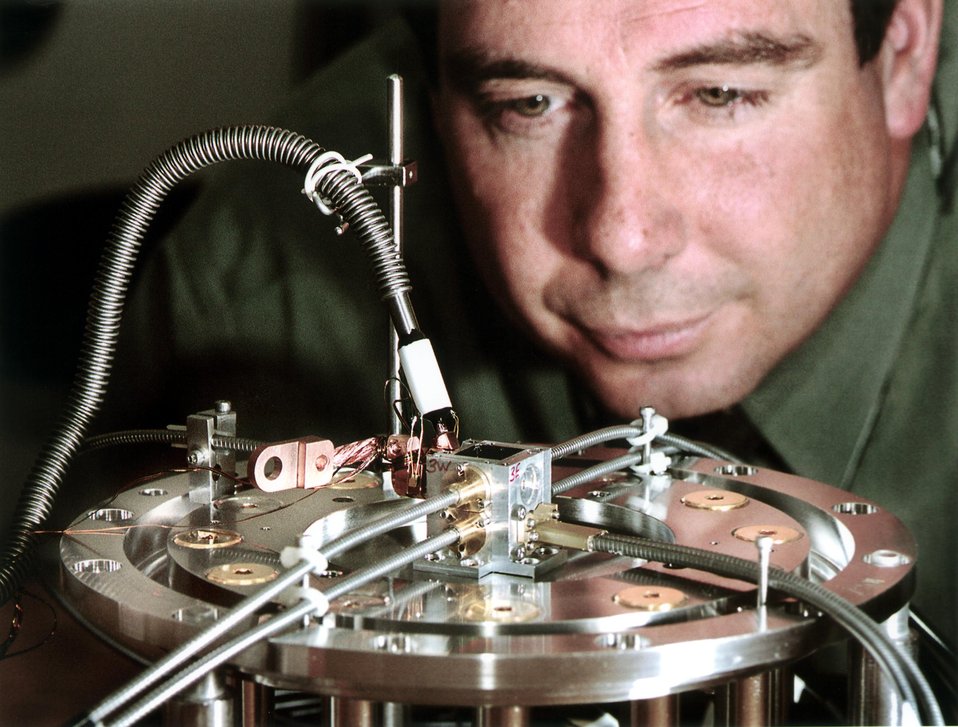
SANDIA RESEARCHER EXAMINES ONE OF THE ISENTROPIC COMPRESSION EXPERIMENTS THAT CREATED MATERIAL RESPONSE CURVE FOR LITHIUM FLUORIDE.

THE TECHNIQUE, RELATIVELY COLD, IS A FAR FASTER WAY THAN ANY AVAILABLE TO TEST MATERIALS OVER A WIDE RANGE OF STRESS. THE IMMEDIATE GOAL OF THE TECHNIQUE IS TO AID DOE'S STOCKPILE STEWARDSHIP PROGRAM BY PROVIDING DATA DESCRIBING HOW MATERIALS REACT AS PRESSURES ON THEM INCREASE. STOCKPILE STEWARDSHIP IS A TERM USED TO DESCRIBE THE U.S. PROGRAM TO MAINTAIN NUCLEAR WEAPONS BY SIMULATING THEIR MAINTENANCE, EXPLOSION, AND EFFECTS WITHOUT PHYSICALLY TESTING THEM.